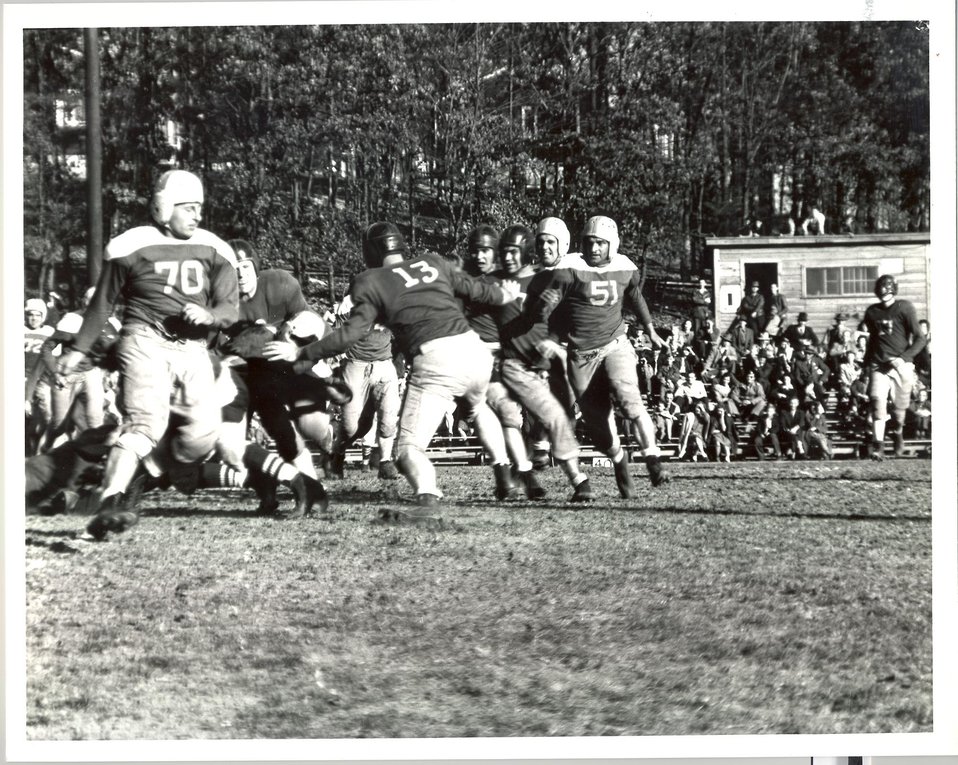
Football Game Between Oak Ridge Military Police Tea